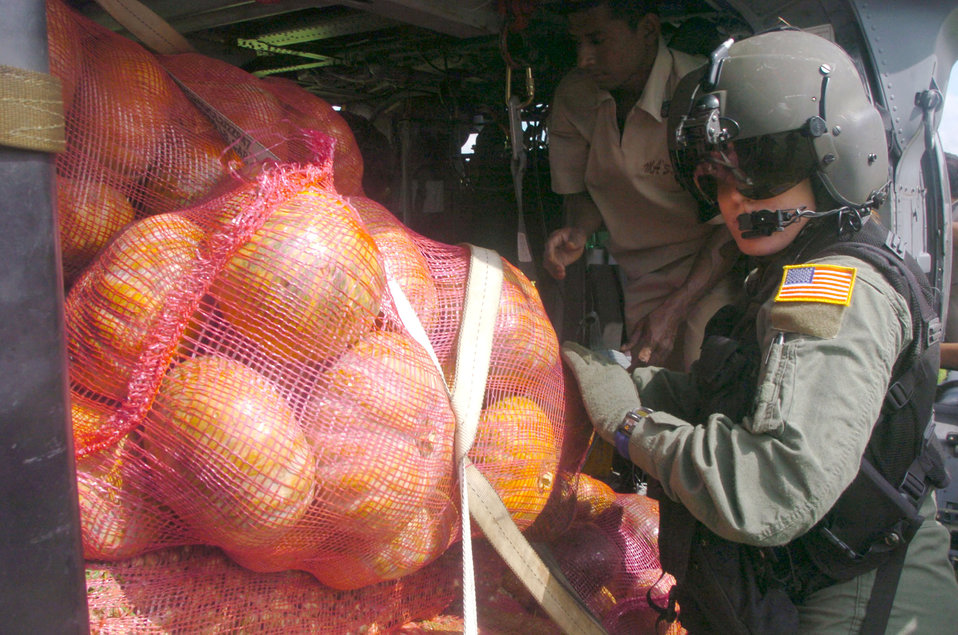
Relief effort making progress

DAMBULA, Sri Lanka -- Airman 1st Class Emily Starcher helps Sri Lankan relief workers unload boxes of vegetables from an HH-60G Pave Hawk helicopter during an Operation Unified Assistance mission here Jan. 12. She is a flight engineer assigned to the 33rd Rescue Squadron at Kadena Air Base, Japan. The Kadena Airmen are helping bring food, medicines and supplies to people affected by the Dec. 26 tsunamis.